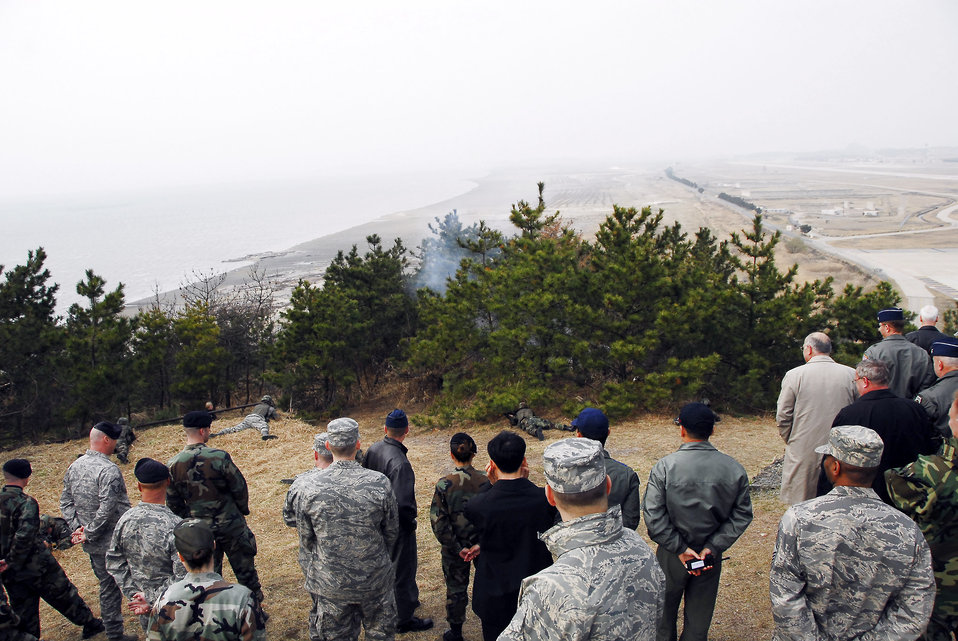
AF Board members visit Kunsan Air Base

Airmen from the 8th Security Forces Squadron demonstrate base defense tactics April 2 for Air Force Board members visiting Kunsan Air Base, South Korea. They were there to get a first hand look at the base and its mission.